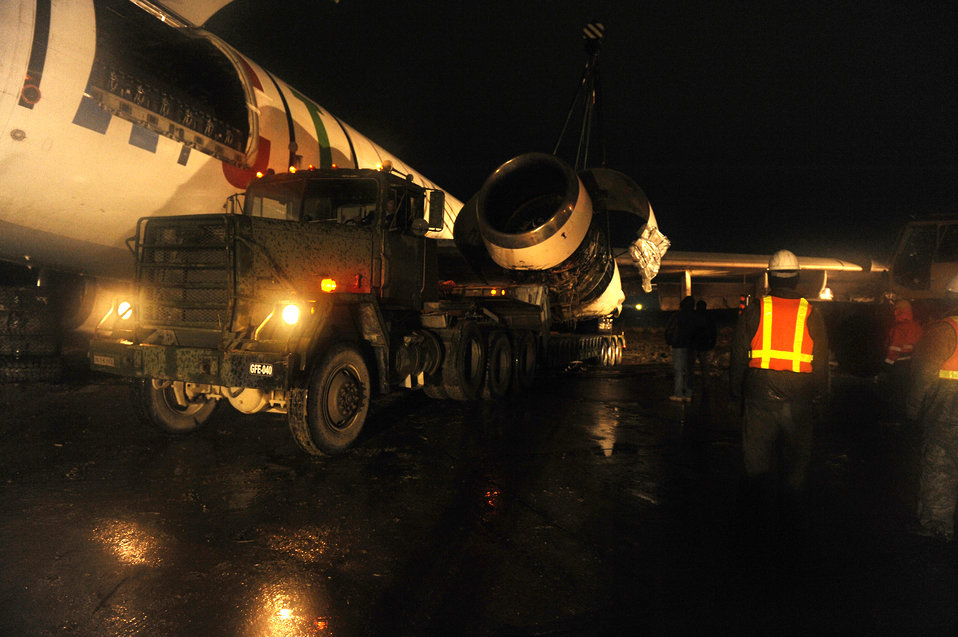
Bagram Airmen respond to emergency aircraft landing

Airmen, Soldiers and contractors move an Airbus A300 after its crew preformed an emergency landing March 3, 2010, at Bagram Airfield, Afghanistan.